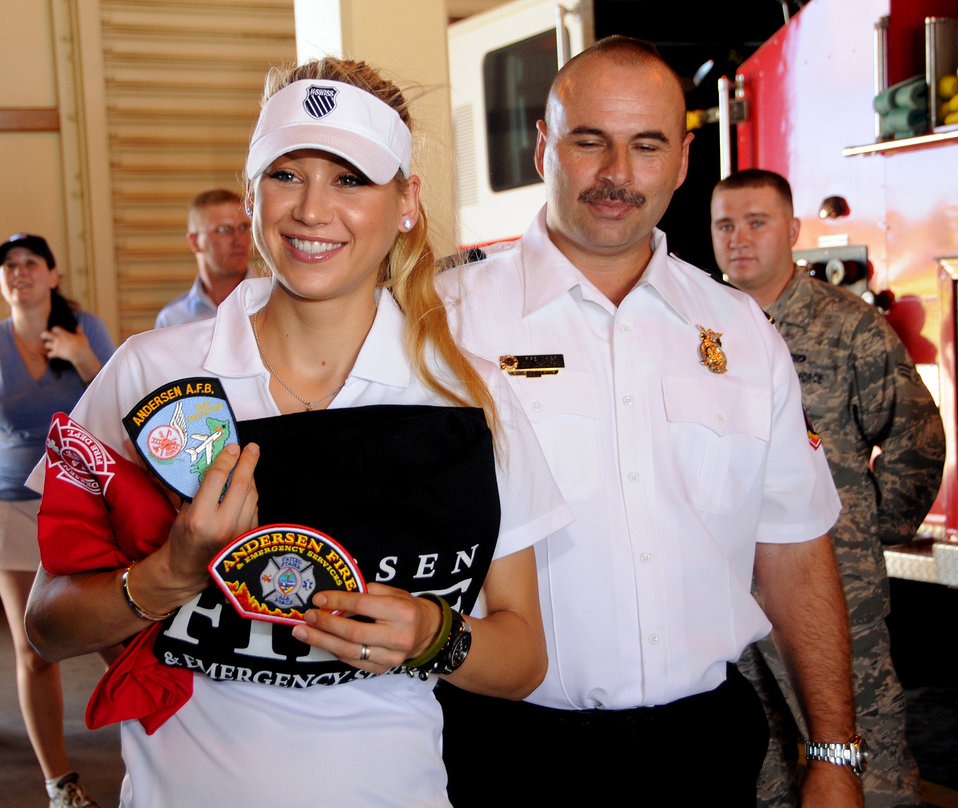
Anna Kournikova visits Andersen

Anna Kournikova accepts gifts from Fire Chief John Thompson Oct. 29 at the Fire and Emergency Services Flight at Andersen Air Force Base, Guam. Her tour was sponsored by the USO to boost servicemembers' morale.